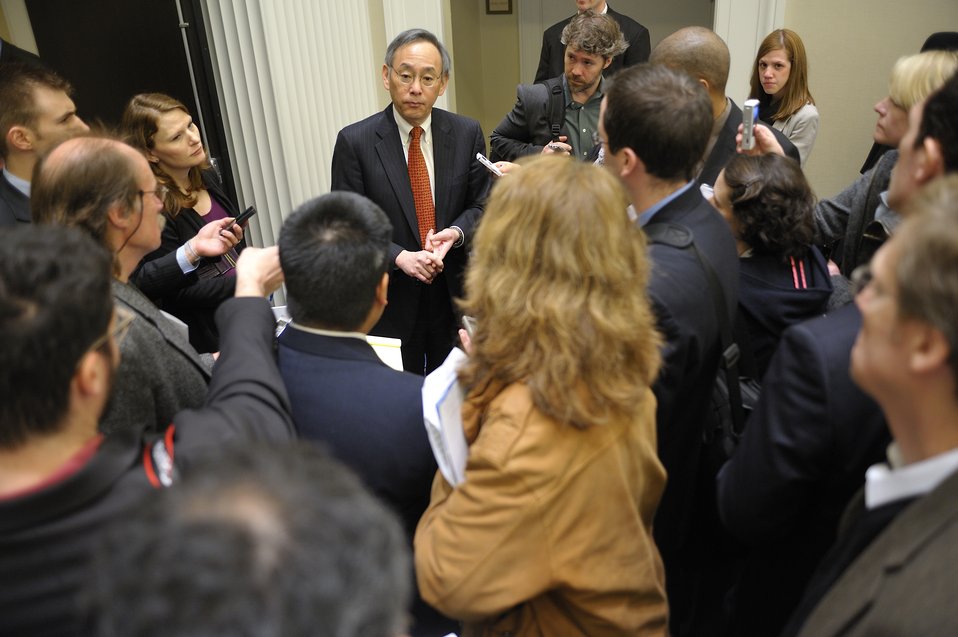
ARPA-E Energy Innovation Summit 2011, 24 of 83

Steven Chu, Secretary, United States Department of Energy holds an impromptu press avail after his Keynote.